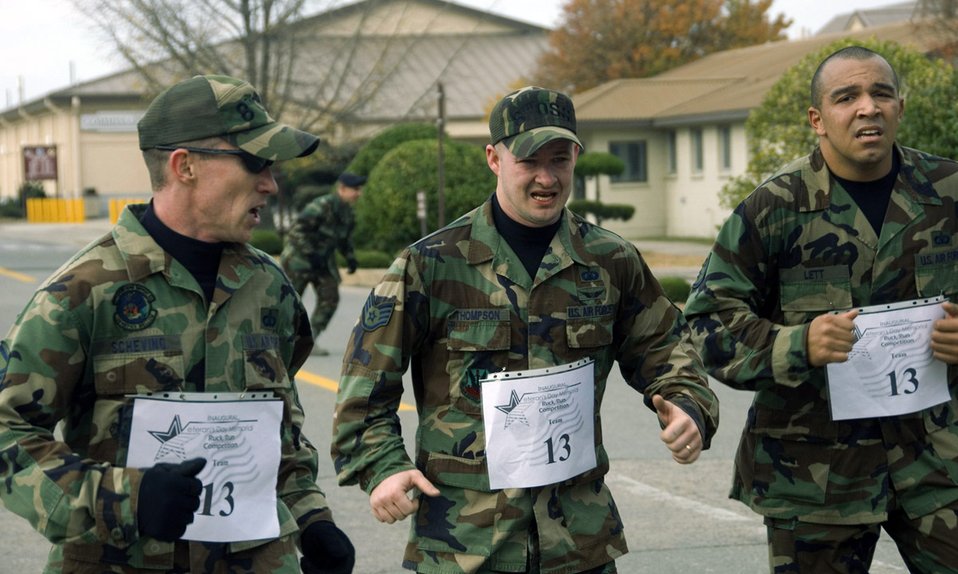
Running a ruck

Master Sgt. Tom Scheving (left) motivates his teammates, Staff Sgts. Jack Thompson and Ken Lett, as they approach the finish line of the first Veterans Day Memorial Ruck/Run held Nov. 17 at Kunsan Air Base, Republic of Korea. Ten teams, each comprising four members, participated in a 10K march carrying 40-pound ruck sacks followed by a 1.5 mile run. Sergeant Scheving and his team are assigned to the 8th Operations Squadron.Teams from the Republic of Korea air force joined U.S. teams from Kunsan and Osan air bases for the competition in an effort to build teamwork and camaraderie.